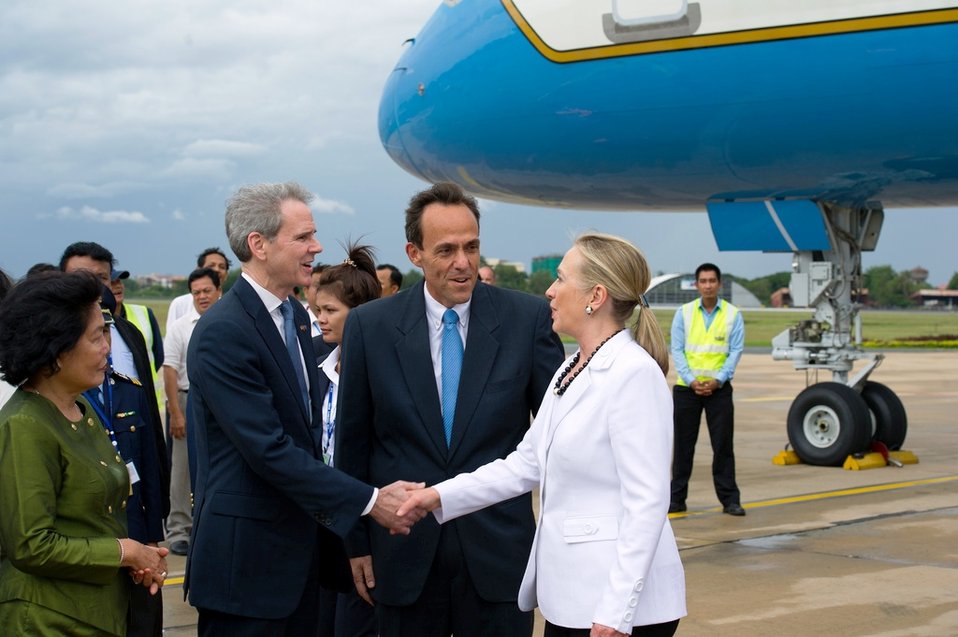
Secretary Clinton Is Greeted by Ambassadors Carden and Todd

U.S. Secretary of State Hillary Rodham Clinton is greeted by U.S. Ambassador to ASEAN David Carden and U.S. Ambassador to Cambodia William Todd upon her arrival in Phnom Penh, Cambodia, on July 11, 2012.